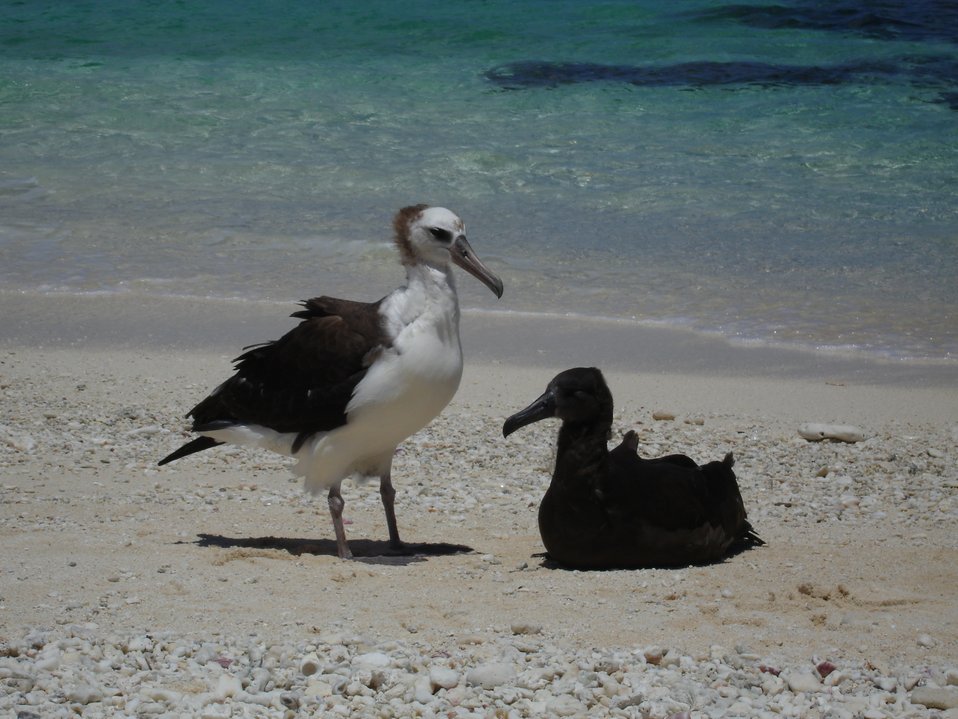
Laysan albatross chicks